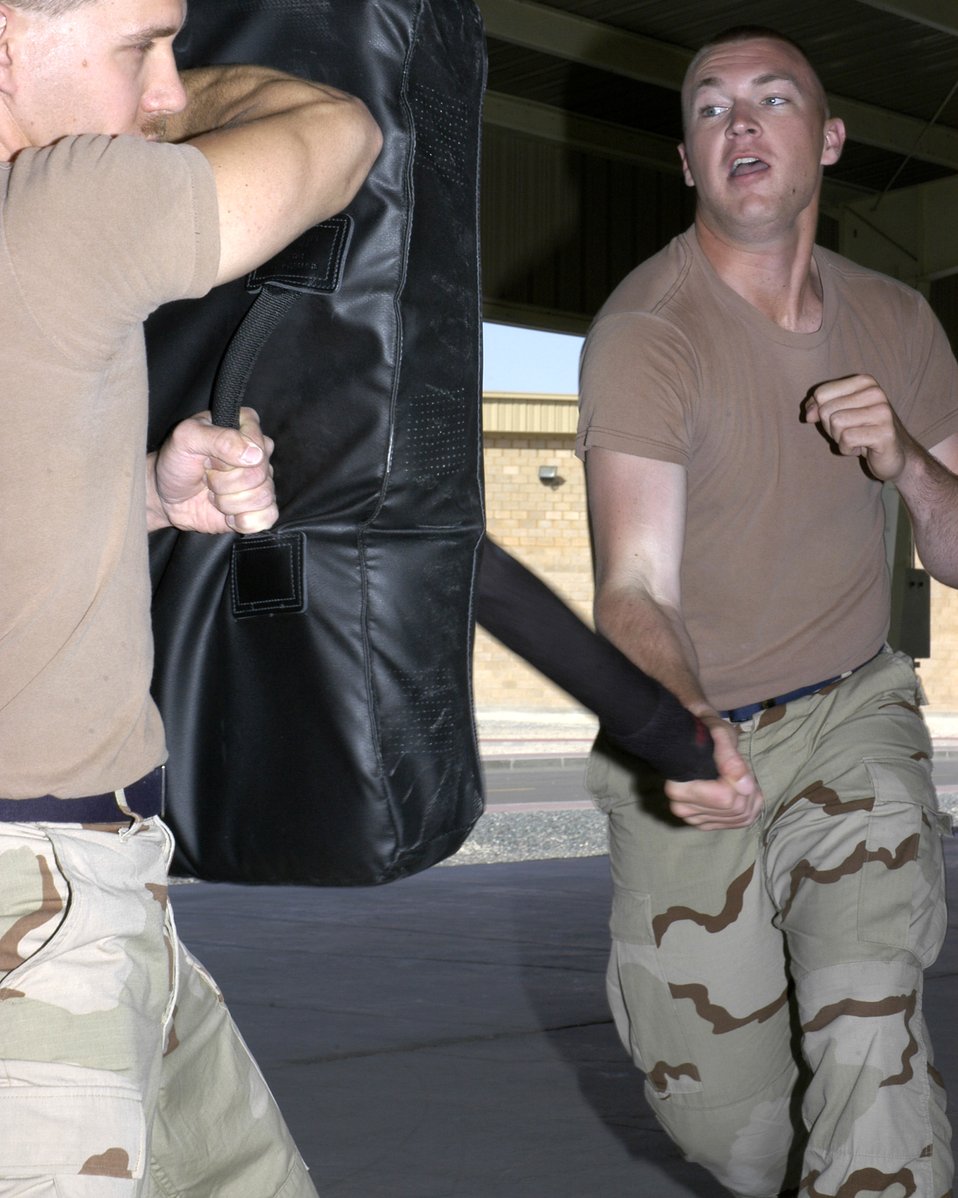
Defensive forces

Senior Airman John Chiki (left) and Airman 1st Class James McGrath, force protection members with the 386th Air Expeditionary Wing, take part in a personal defense class held March 30 in Southwest Asia. All 386th AEW force protection personnel are trained in the use of the ASP, an extending baton used by police and security forces.